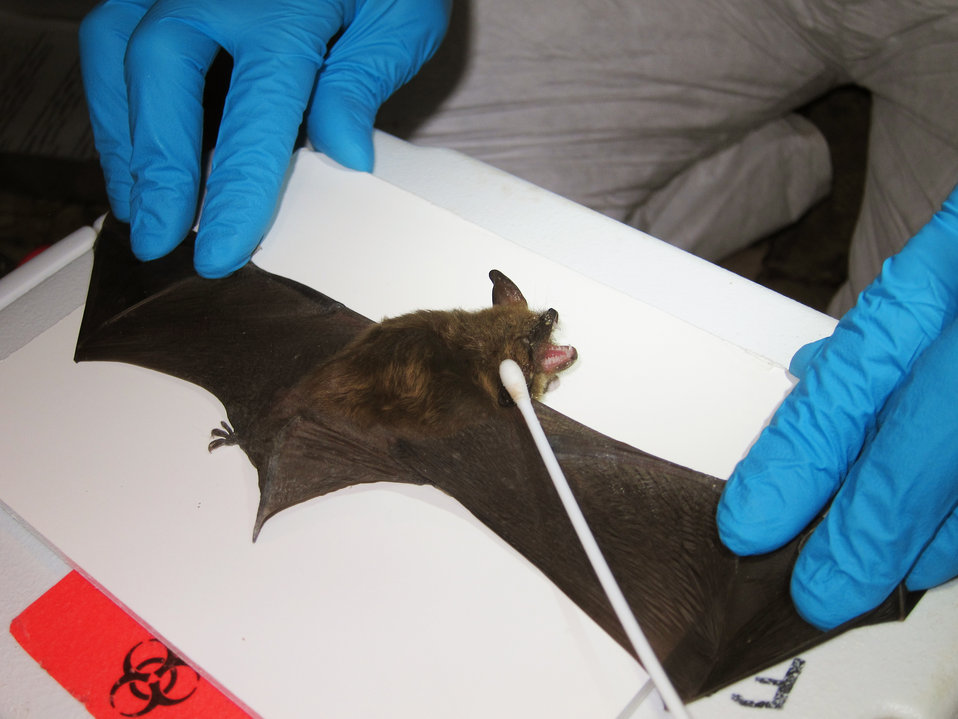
Researchers collect swab samples from a northern long-eared bat with visible symptoms of WNS

University of Illinois researchers collect a swab sample from a Geomyces destructans infected Myotis septentrionalis, northern myotis (Vespertilionidae). LaSalle County, Illinois. January 2013